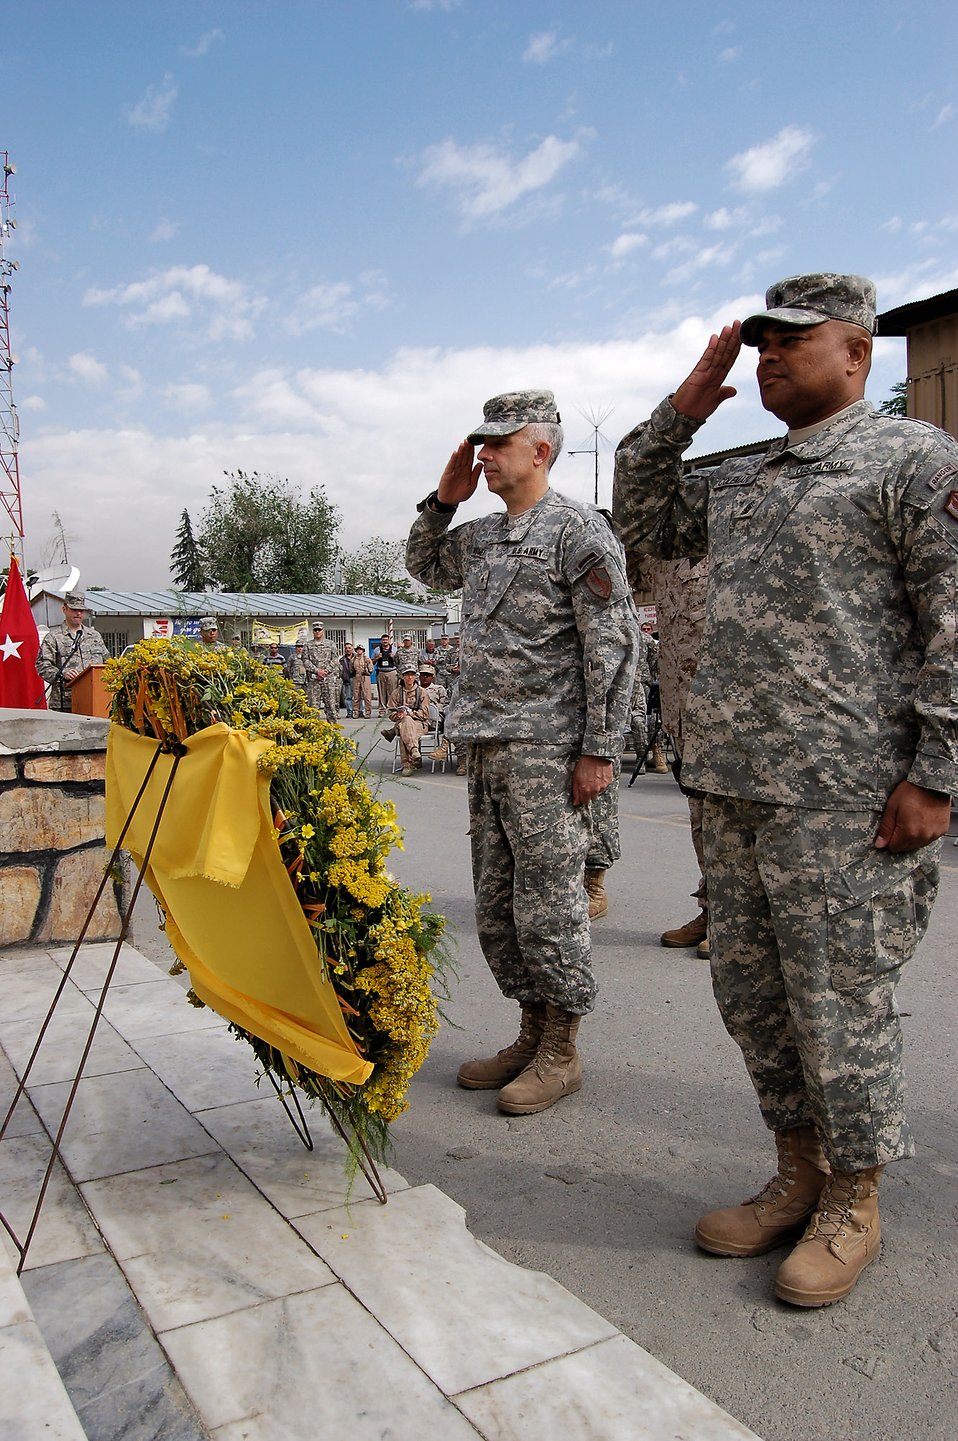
Deployed servicemembers honor fallen heroes

Army Brig. Gen. Andrew B. Twomey (left), Combined Security Transition Command-Afghanistan deputy commanding general, and Command Sgt. Maj. Arthur L. Coleman, CSTC-A command sergeant major, salute the colors in a Memorial Day ceremony May 26 at Camp Eggers in Kabul, Afghanistan. The Memorial Day service was dedicated to the remembrance of fallen servicemembers, particularly the 62 CSTC-A comrades who gave their lives in service to their country.